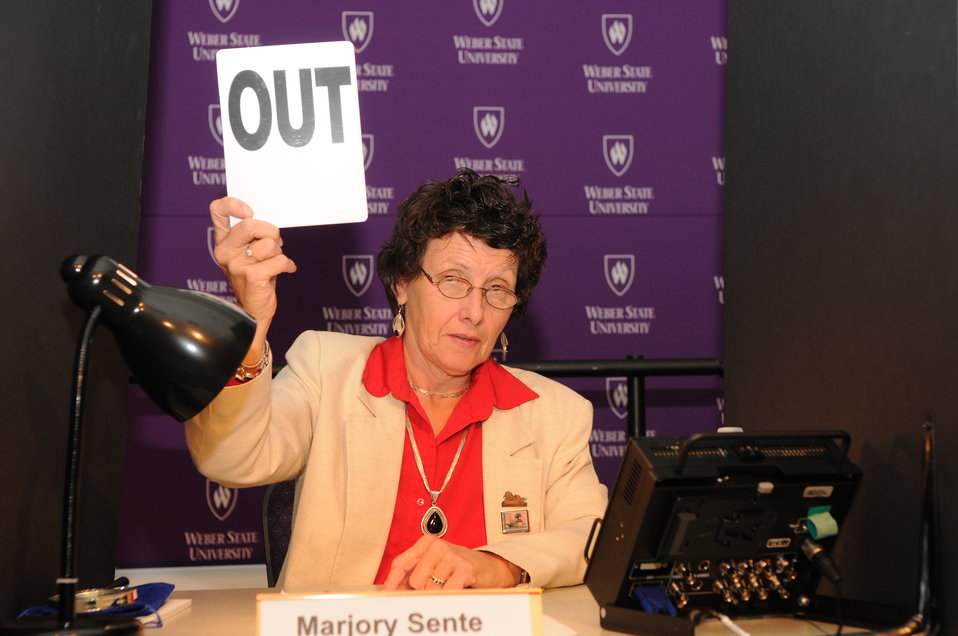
Artwork Judge

The U.S. Fish & Wildlife Service sponsored the 2012 Federal Duck Stamp Art Contest September 28 and 29 in Ogden, Utah, at Weber State University. A panel of five judges was responsible for choosing the art work used to design the 2013-2014 Migratory Bird Hunting and Conservation Stamp.